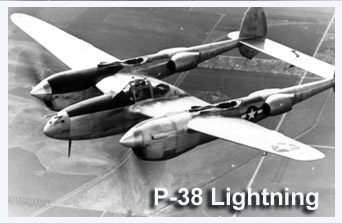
P-38 Lightning

A P-38 Lightning flies over Orlando, Fla., in the 1940s with deadly bombs barely visible beneath its wings. At the Army Air Forces Tactical Center in Orlando, the P-38 demonstrated its ability to carry bomb pay loads up to 2,000 pounds.